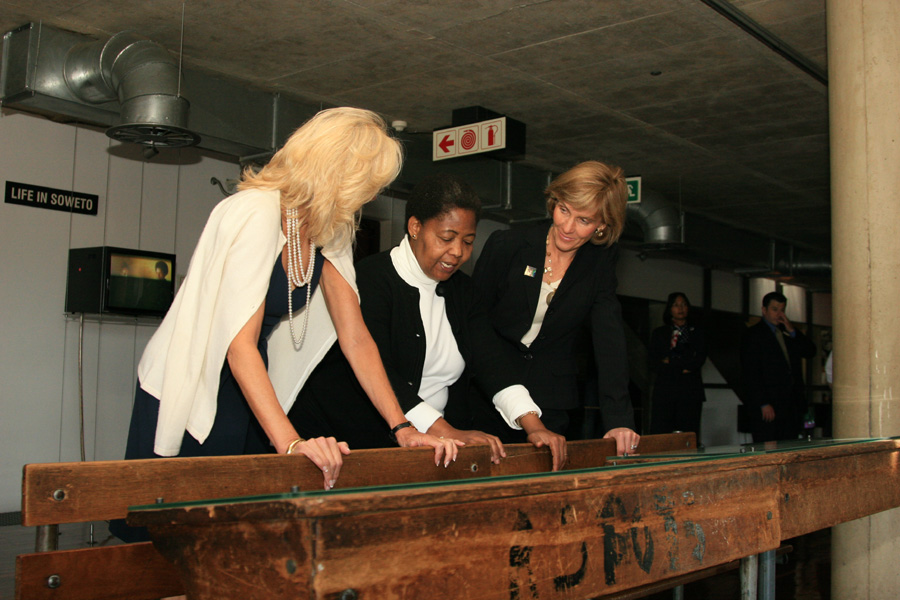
Dr. Jill Biden and Liz Berry Gips Visit Hector Pieterson Museum

Dr. Jill Biden, wife of Vice President Joseph Biden, and Liz Berry Gips, wife of U.S. Ambassador to South Africa Donald H. Gips, visit the Hector Pieterson Museum in Soweto, South Africa, on June 12, 2010.